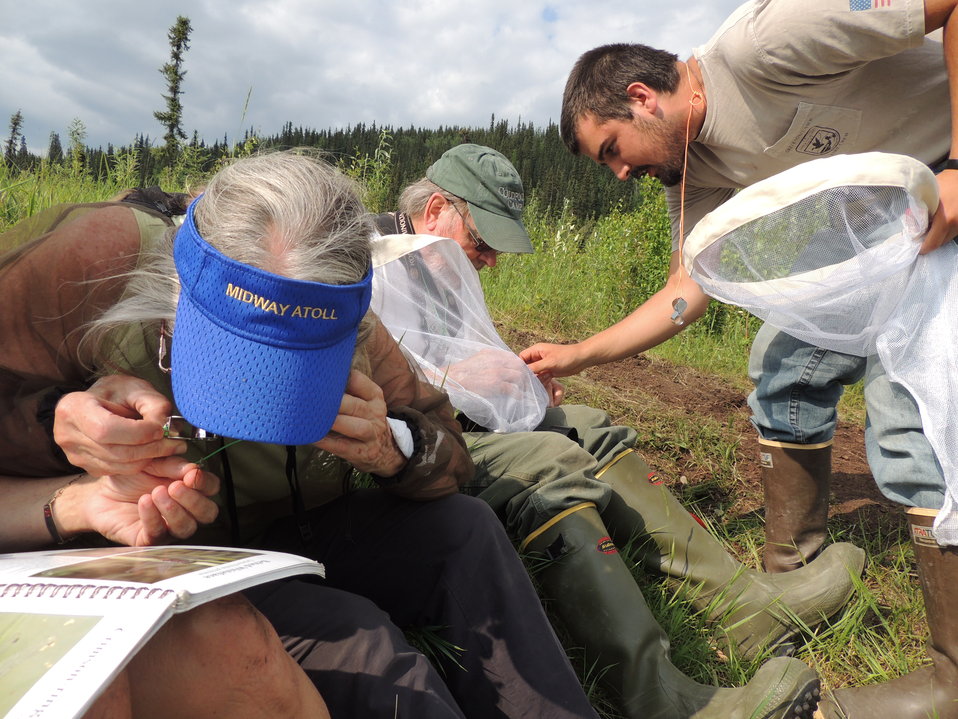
Identifying dragonflies

(USFWS)